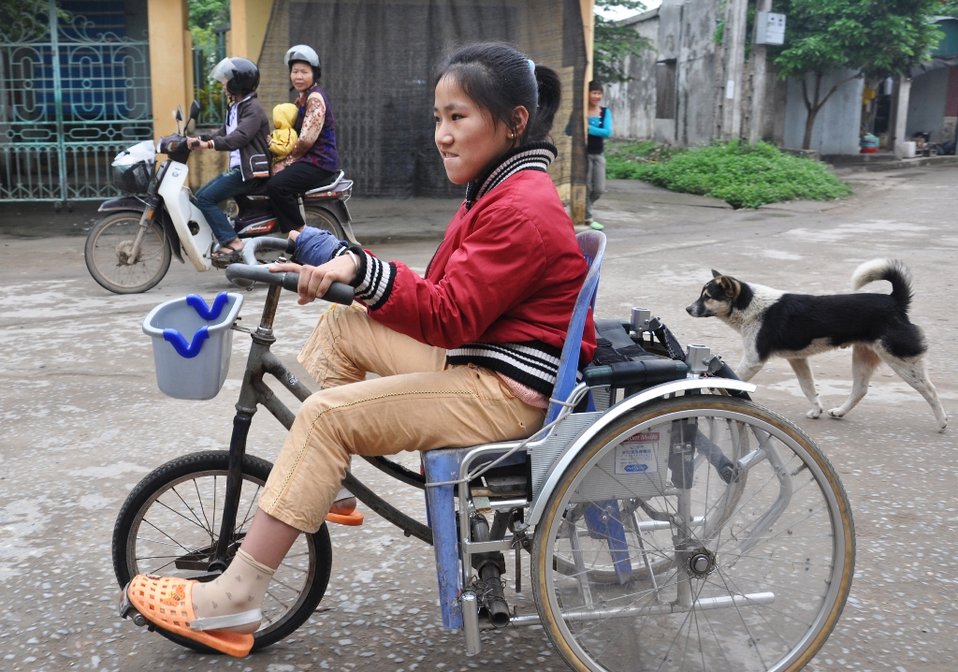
USAID assists persons with disabilities in Vietnam

Pham Thi Bich Ngoc rides the modified wheelchair her father designed to take advantage of her leg power and get her out into the community.